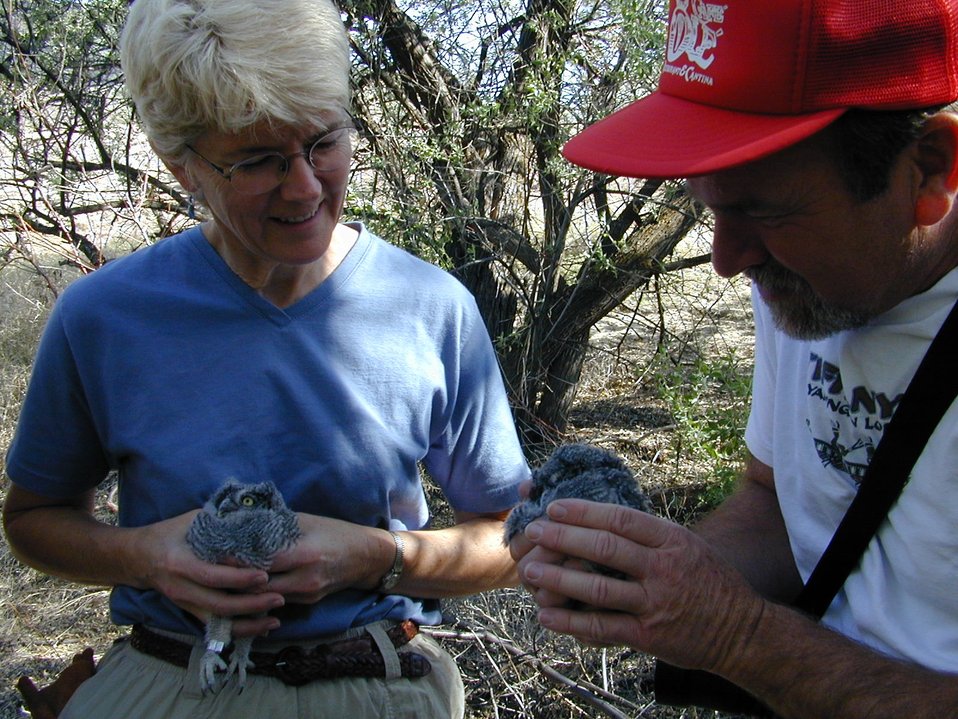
Environmental Education Fire Workshop Timberline High School Fall 2000